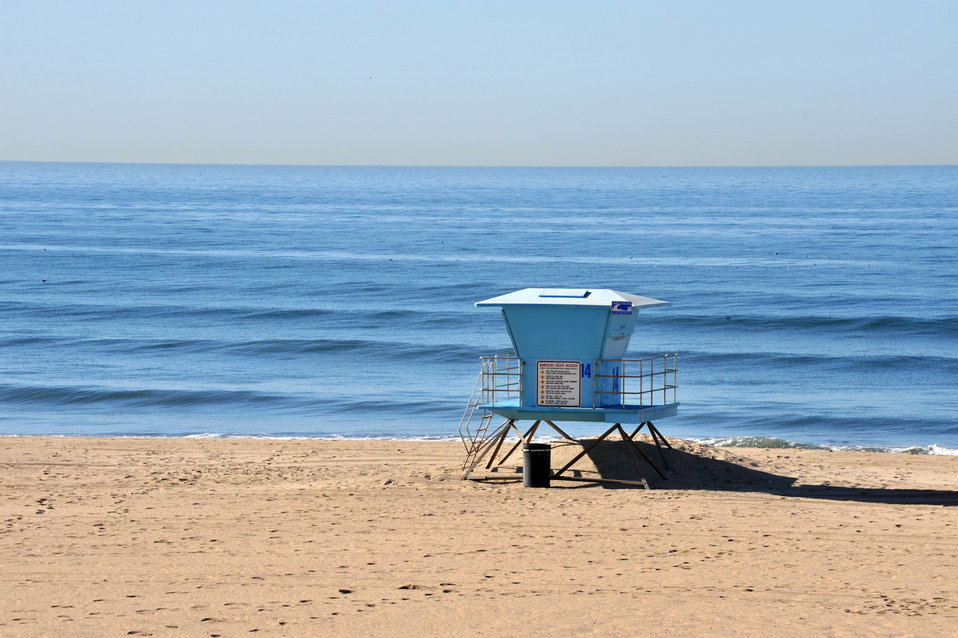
Beach at huntington beach.